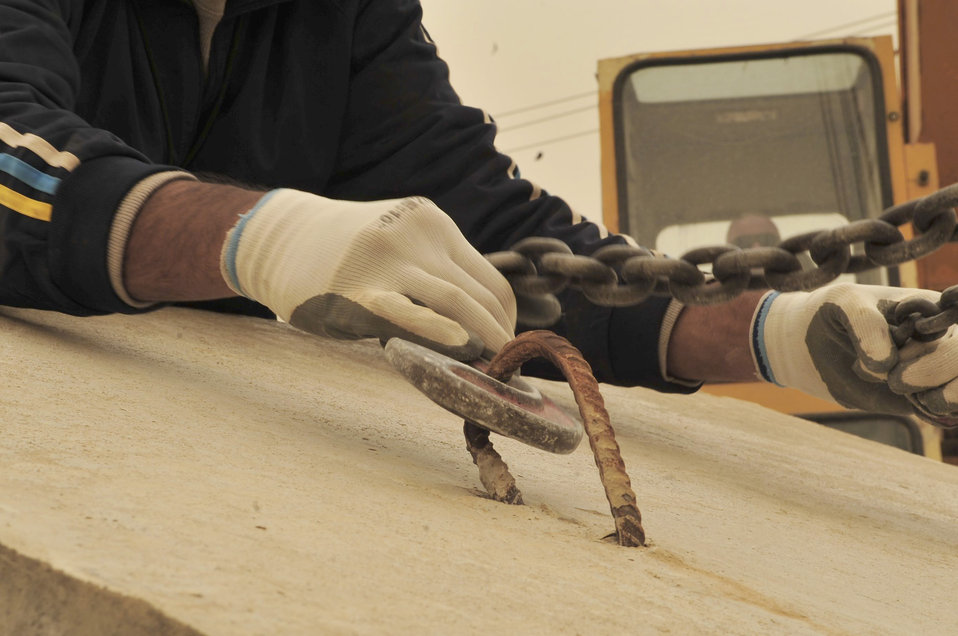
Airmen prepare Iraq bases for transition

An Iraqi contractor holds steel chains from a 20-ton crane in place, as a crane operator awaits a signal to lift a 6-ton concrete T-wall barrier onto an awaiting flatbed truck, March 3, 2011, at Victory Base Complex in Baghdad. These crews are supporting a partnered effort to turn more than 1,200 U.S. forces T-walls to the Iraqi Army. Each T-wall section is 12-feet tall.